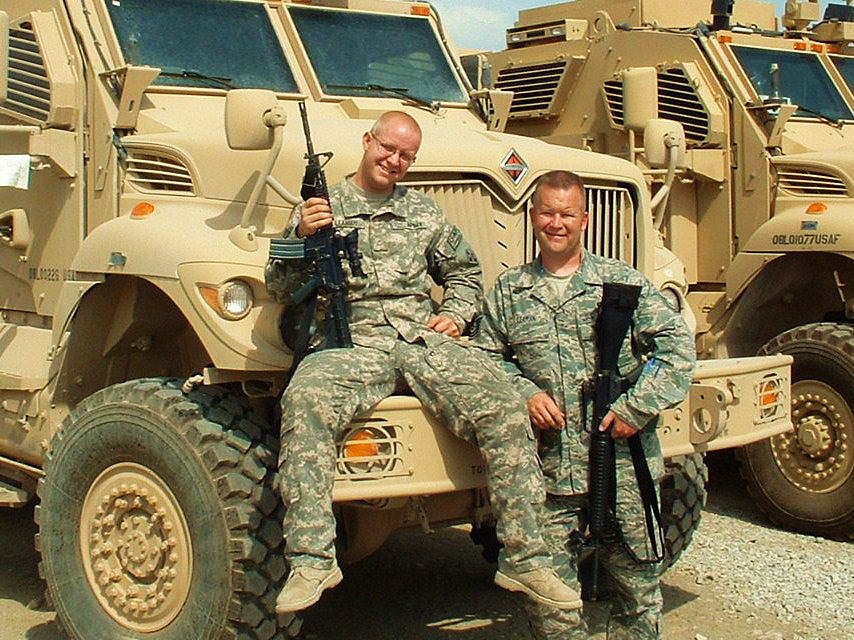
Army Spc. Kevin Leaman poses for a photo with his dad, Tech. Sgt. Thomas Leaman

Army Spc. Kevin Leaman (left) poses for a photo with his dad, Tech. Sgt. Thomas Leaman, Nov. 19, 2009, at Bagram Airfield, Afghanistan. Sergeant Leaman is the 455th Expeditionary Logistics Readiness Squadron NCO in charge of the fuels mobility support equipment shop deployed from Peterson Air Force Base, Colo. Specialist Leaman is a vehicle maintainer with the 4th Infantry Division and deployed from Fort Carson, Colo.